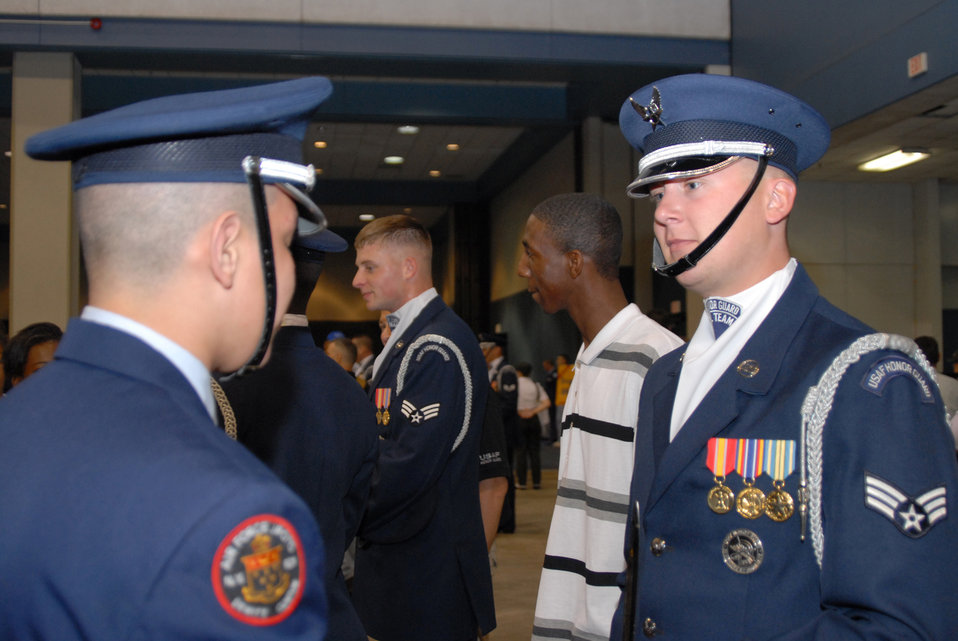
Air Force Honor Guard show competitors team espirit

Senior Airman David Leininger, Air Force Honor Guard Drill Team member, talks with a JROTC cadet after the team's performance at the National High School Drill Team Championships May 6 in Daytona, Fla. The team's performance was the last of their latest tour to Florida, where they also performed at the Fort Lauderdale Air and Sea Show.